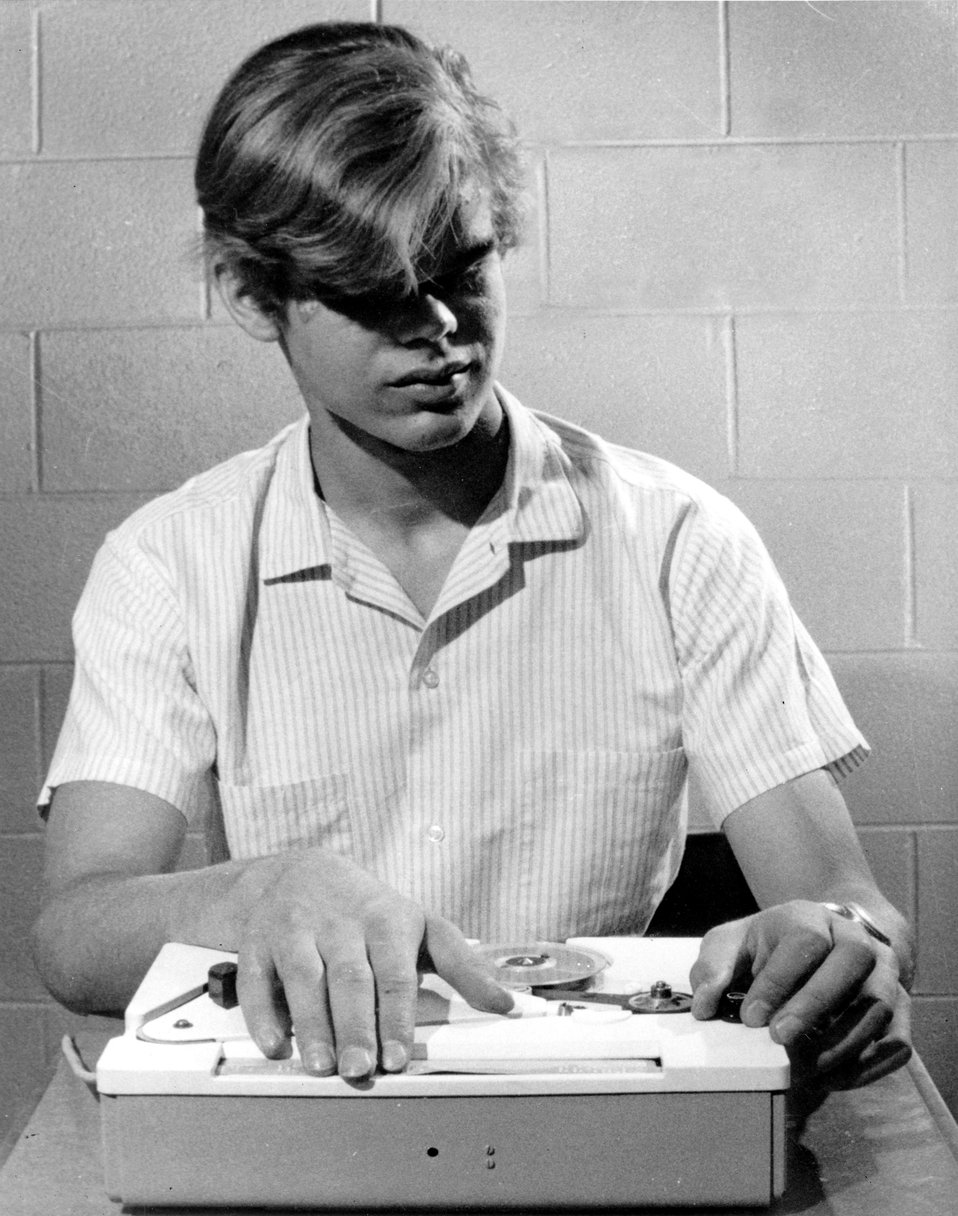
Argonne Braille Machine
c.1974